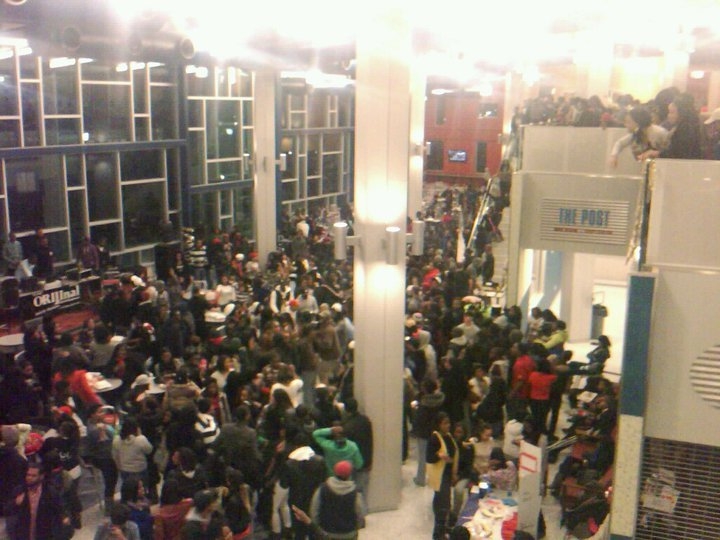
July, 2011 EPA ecoAmbassadors at Delaware State University

Students gathered in the “Taste Lounge” at Delaware State University to hear about the ecoAmbassador program.